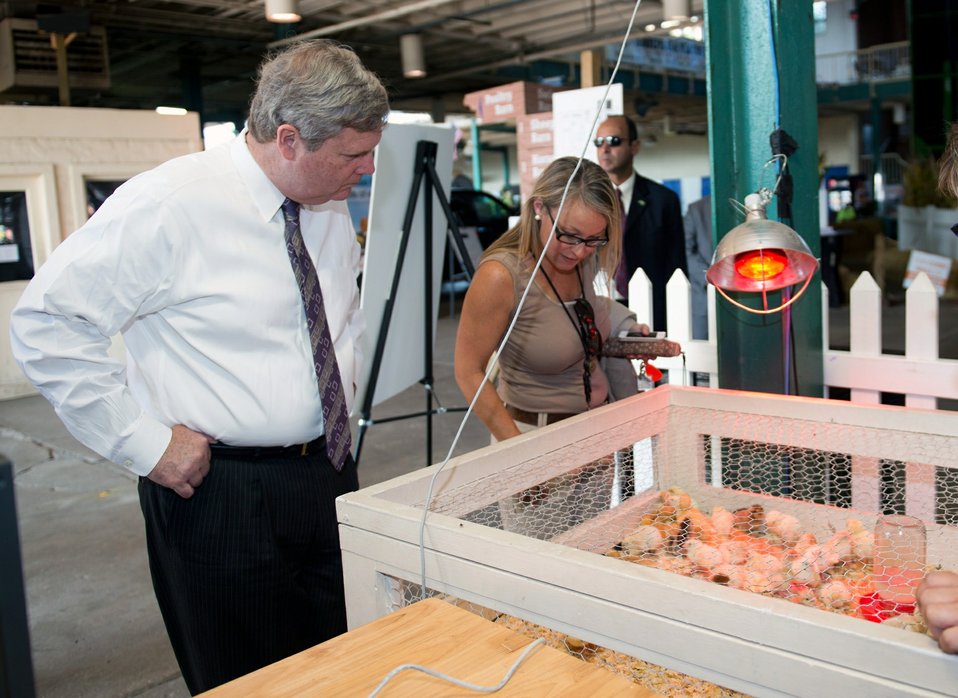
Agriculture Secretary Tom Vilsack and Ohio State Fair Commissioner Jennifer Lynch walk through the Agricultural and Horticultural Building at the Ohio State Fair in Columbus, OH on Friday, August 3, 2012. Secretary Vilsack stopped and looked at baby chicks on display at one of the exhibits at the fair.